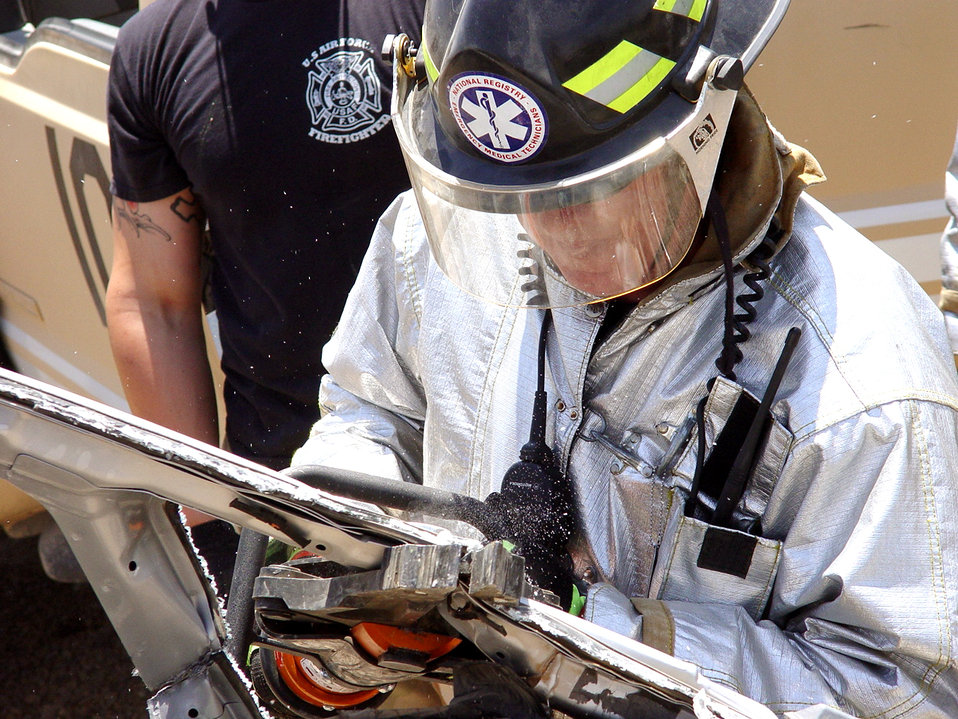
Firefighters prepared when disaster strikes

BALAD AIR BASE, Iraq -- Staff Sgt. Phillip Clark practices a vehicle extraction during an exercise here. Firefighters train continuously so they are prepared for any emergency situation that arises. Sergeant Clark is a firefighter with the 332nd Expeditionary Civil Engineer Squadron.